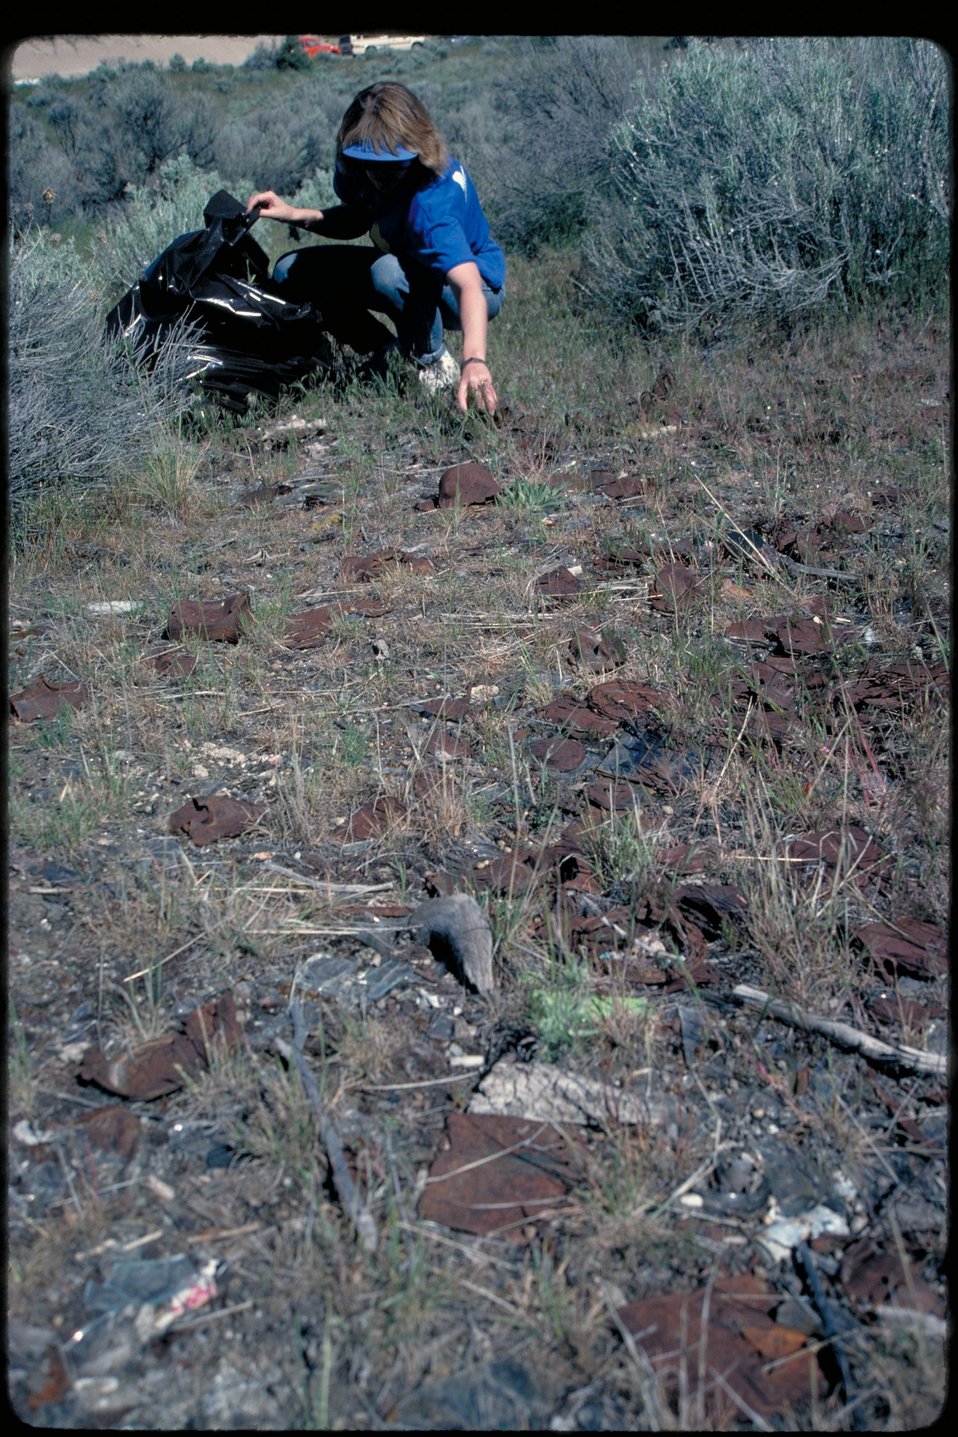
Volunteer Cleanup Boise Front Four Rivers Field Office LSRD Lower Snake River District